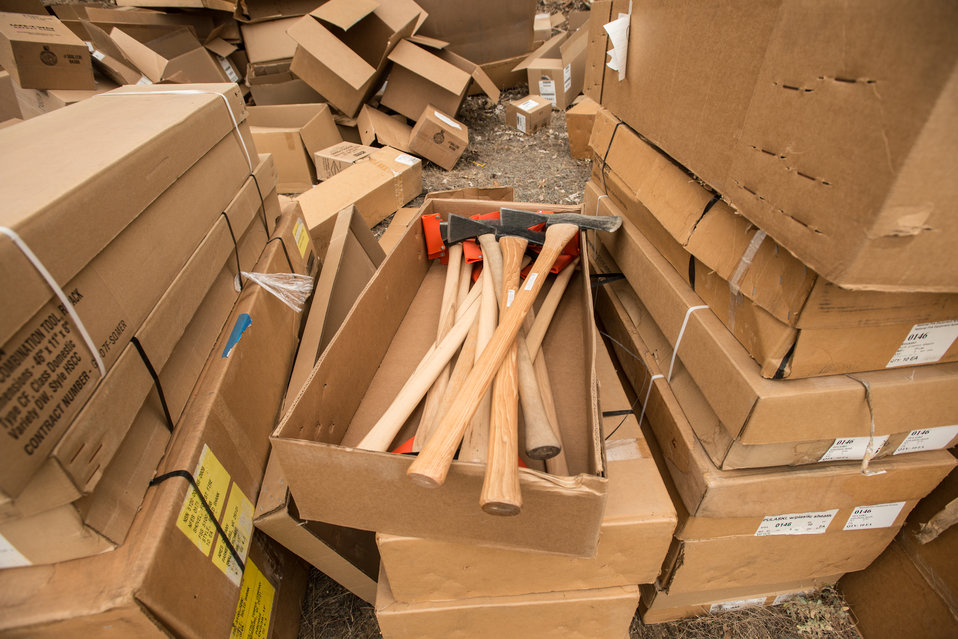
New Pulaski Axes available for firefighters at the Salmon River Complex Fire burning northwest of Sawyers Bar and west of Etna and Yreka, CA in the Klamath National Forest, on Tuesday, Aug. 6, 2013.It is vital that when a firefighter needs fire resistant clothing, a Mccloud Tool, Pulaski Axe, Combi Tool, pumps, connectors and hoses to draw water from a portable reservoirs to pressurize hand line (fire hoses), they go to this centralized point to get readily available item for issue or replacement as needed. These supplies have been shipped from the National Interagency Supply Cache System depots and/or other caches to this and other fires across the nation.